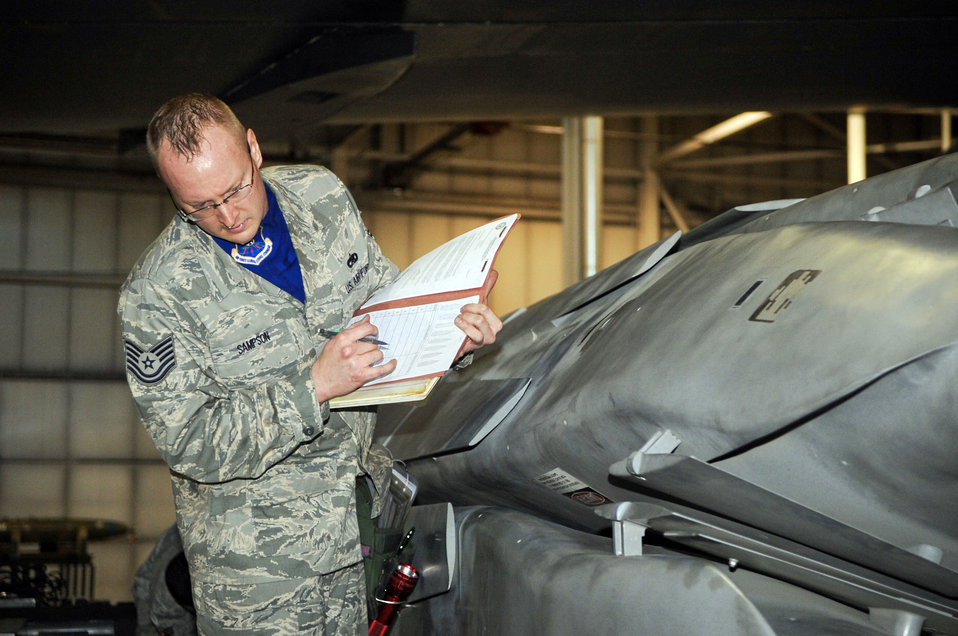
Global Strike Challenge load competition kicks off at Minot

Tech. Sgt. Brenton Sampson participates in a load crew competition April 13, 2010, at Minot Air Force Base, N.D. Sergeant Sampson is a 5th Aircraft Maintenance Squadron load crew member.